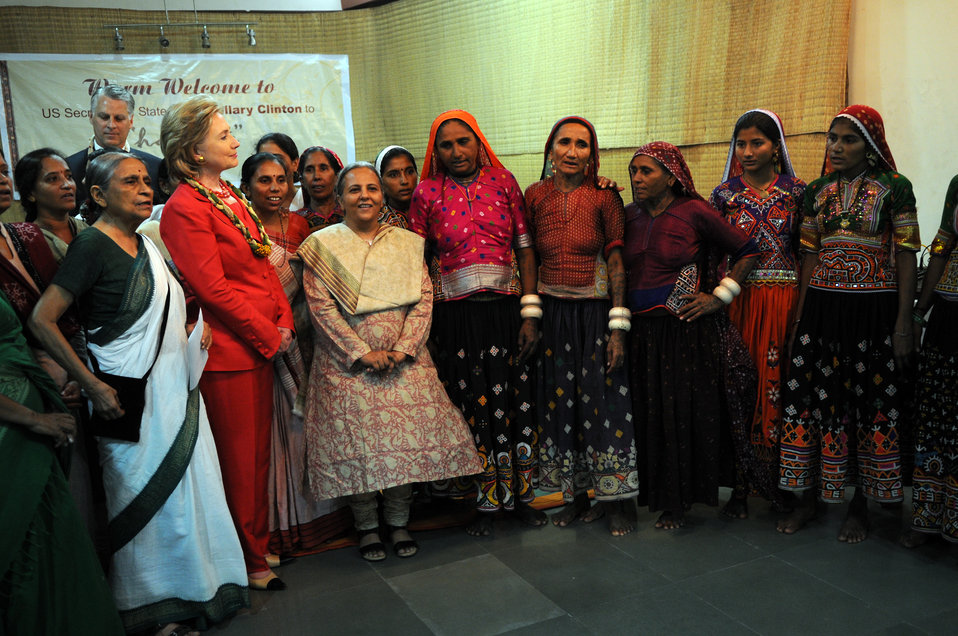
Secretary Clinton Visits SEWA Outlet

SEWA (Self Employed Women’s Association) members and artisans sing “We Shall Overcome” with U.S. Secretary of State Hillary Rodham Clinton in Gujarati, India July 18, 2009.